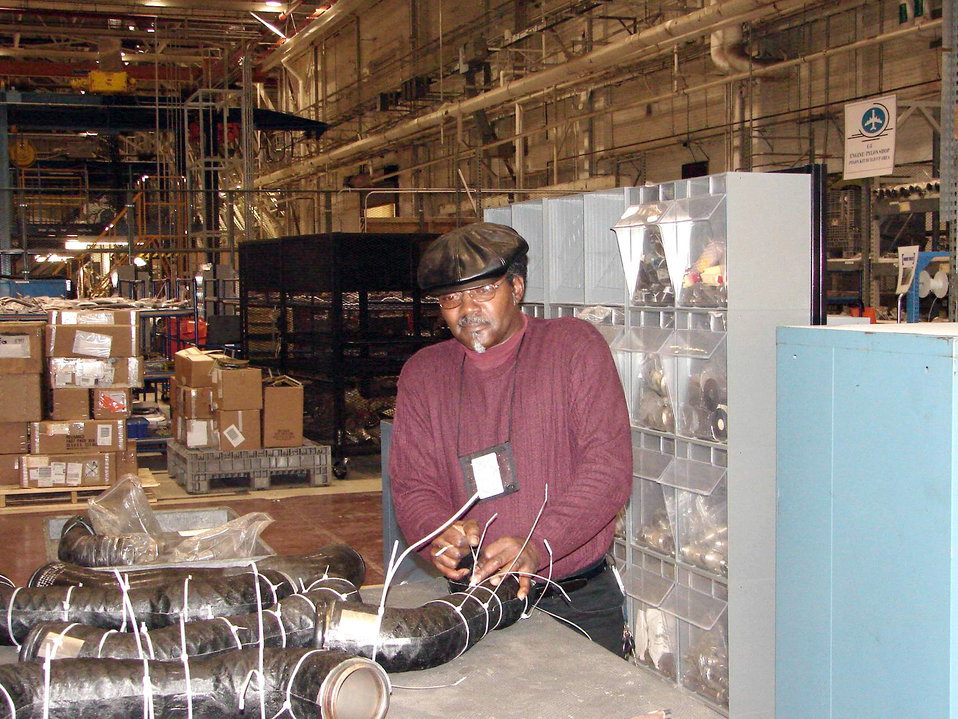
Streamlining maintenance operations

James Releford repairs the insulation on hot air ducts for C-5 Galaxy pylons. The Warner Robins Air Logistics Center at Robins Air Force Base, Ga., received the 2006 Franz Edelman Award for Achievement in Operations Research on Monday, May 1, 2006, for its use of operations research to streamline C-5 maintenance procedures. Using innovative management processes, the time required to repair and overhaul the aircraft was reduced 33 percent. Mr. Releford works in the center's C-5 pylon shop.